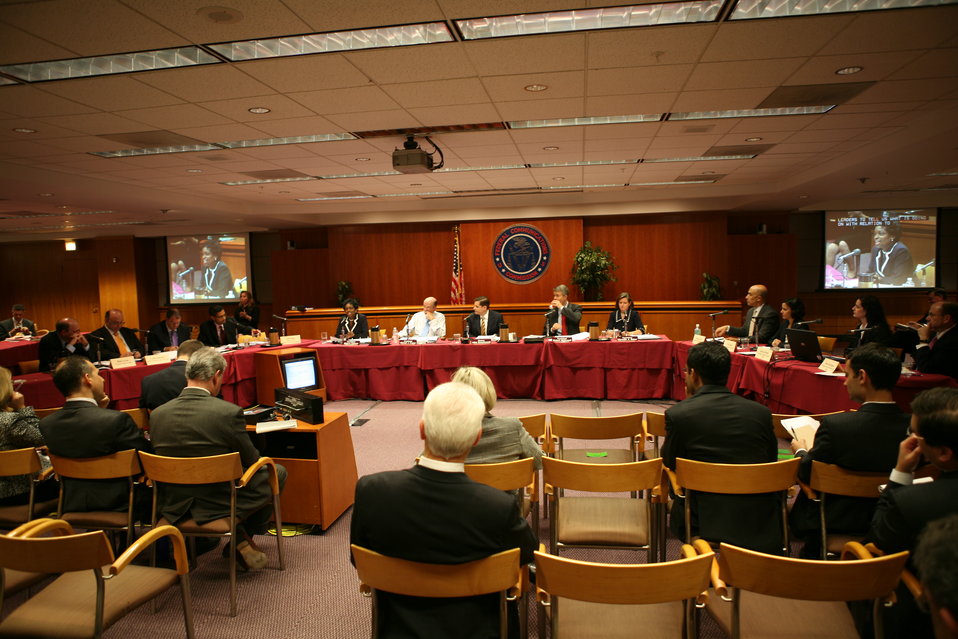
Midterm Review11

Broadband Midterm Review, 9-29-09